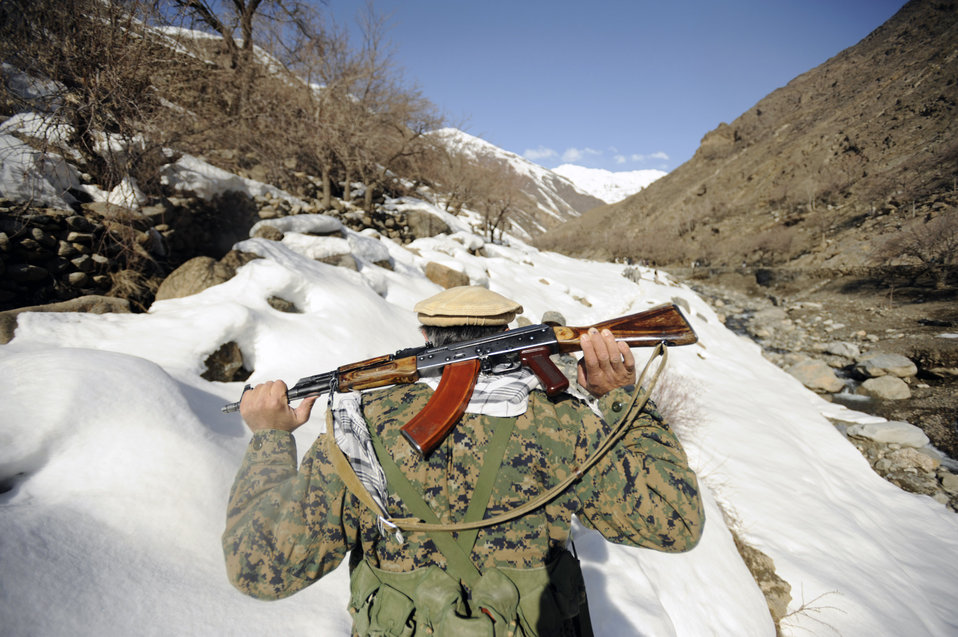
Panjshir PRT visits Afghan villagers

A mujahadeen guard walks with American servicemembers of the Afghanistan Panjshir Provincial Reconstruction Team during a March 5 site visit in Afghanistan.